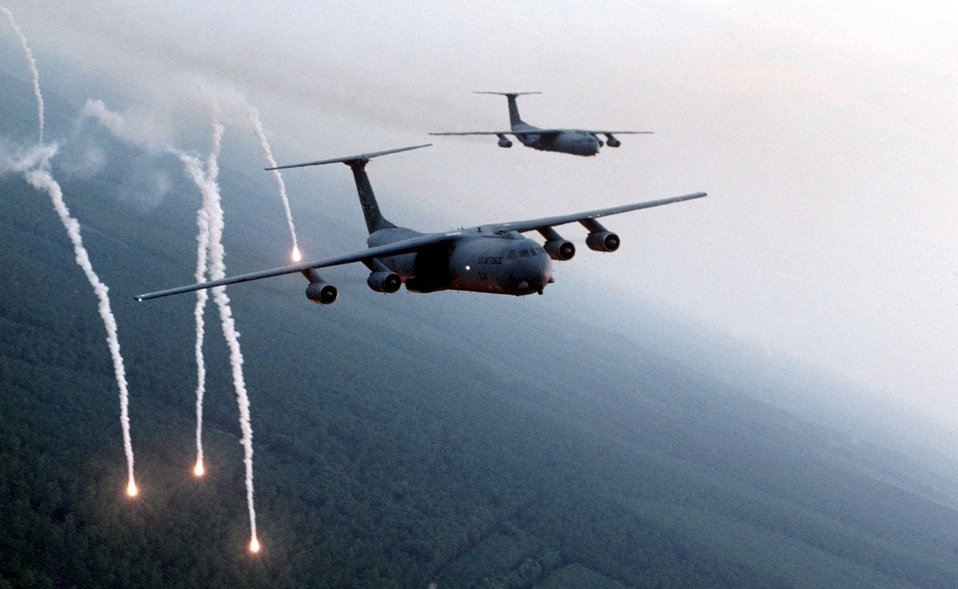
Workhorse

FILE PHOTO -- The C-141B Starlifter is the workhorse of the Air Mobility Command. The Starlifter fulfills the vast spectrum of airlift requirements through its ability to airlift combat forces over long distances, deliver those forces and their equipment either by air, land or airdrop, resupply forces and transport the sick and wounded from the hostile area to advanced medical facilities. The C-141 force, nearing nine million flying hours, has a proven reliability and long-range capability. In addition to training, worldwide airlift and combat support, the C-141 has amassed a laudatory record in response to humanitarian crises. The C-141, with its changeable cargo compartment, can transition from rollers on the floor for palletized cargo to a smooth floor for wheeled vehicles to aft facing seats or sidewall canvas seats for passengers, quickly and easily, to handle over 30 different missions.